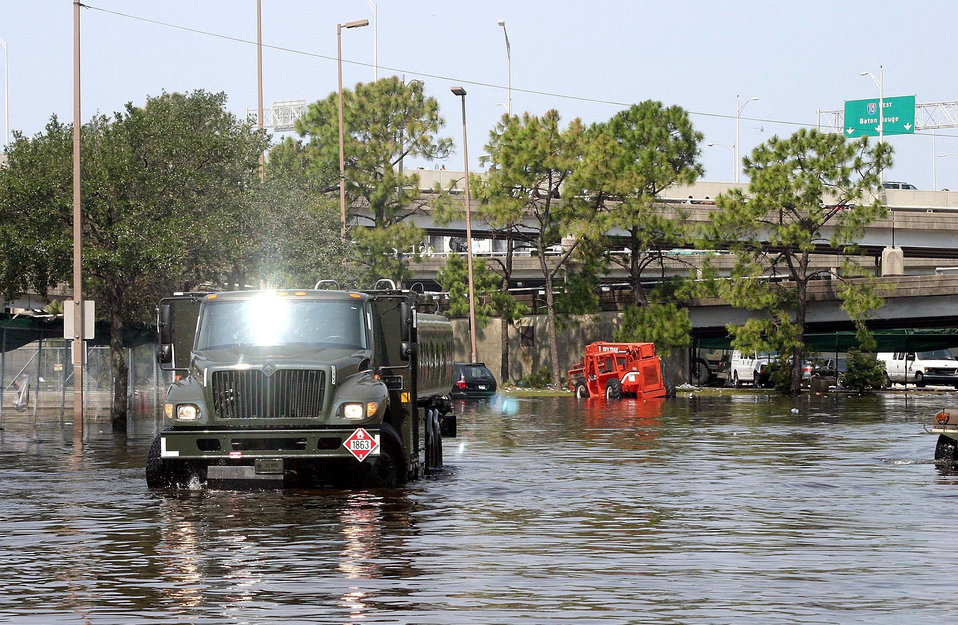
Fuels team assists in hurricane recovery efforts

NEW ORLEANS -- An R-11 jet fuel truck drives through the flooded streets here to its operating location. A fuels team from Barksdale Air Force Base, La., deployed here to assist with refueling operations in the city, to include refueling generators and stranded vehicles.